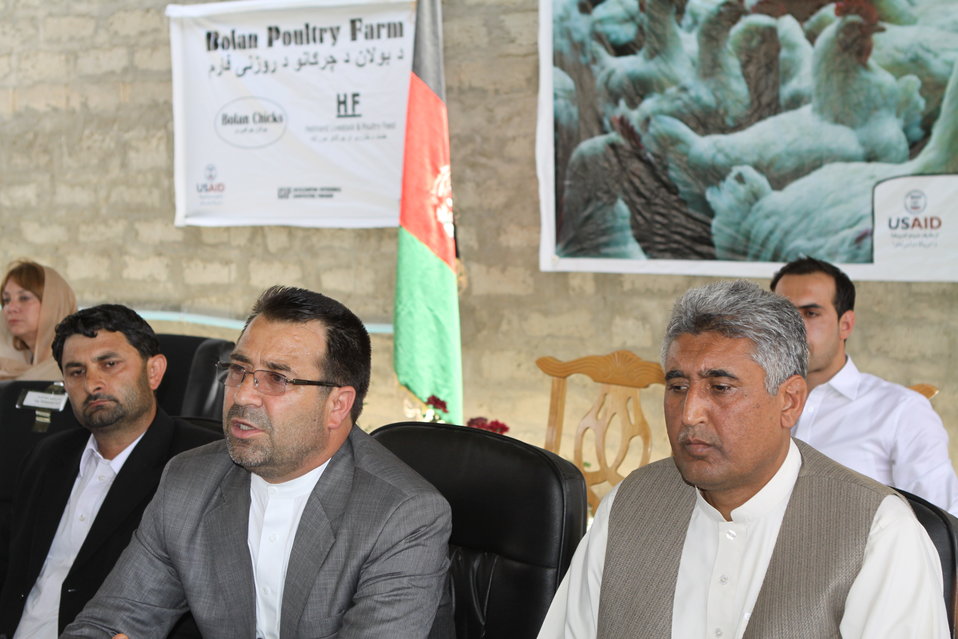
Bolan Poultry Farm